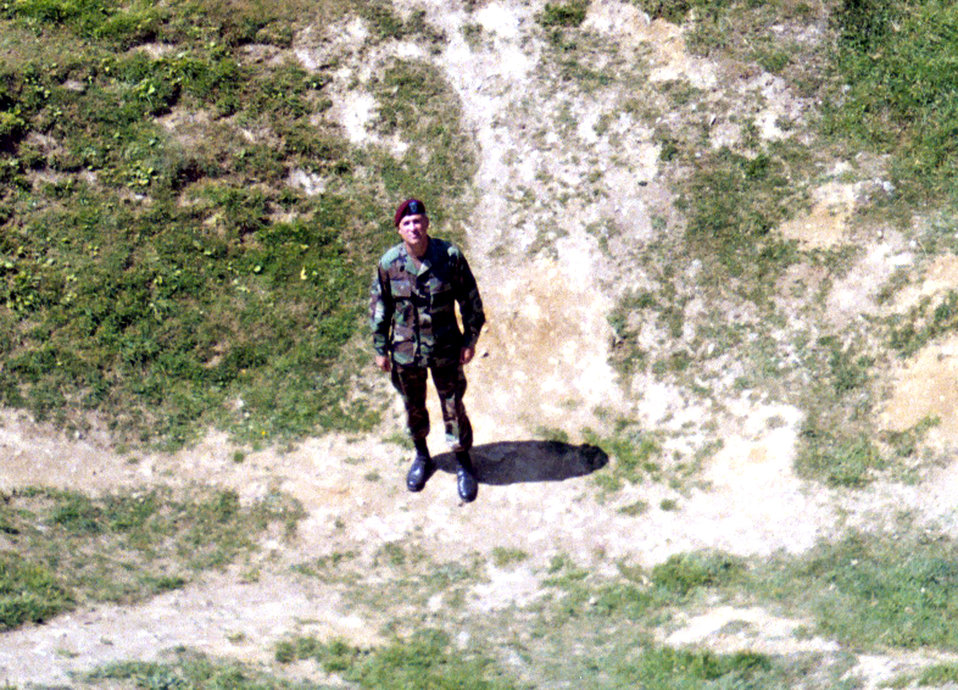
Parachute drop brings appreciation for freedom

Master Sgt. Andrew Johnson stands in a bomb crater from World War II near Normandy, France, on June 7. Sergeant Johnson was the only U.S. Air Force member participating as a paratrooper in the 62nd anniversary of the D-Day invasion of June 6, 1944. Sergeant Johnson is a contingency skills instructor at the 421st Combat Training Squadron at Fort Dix, N.J.